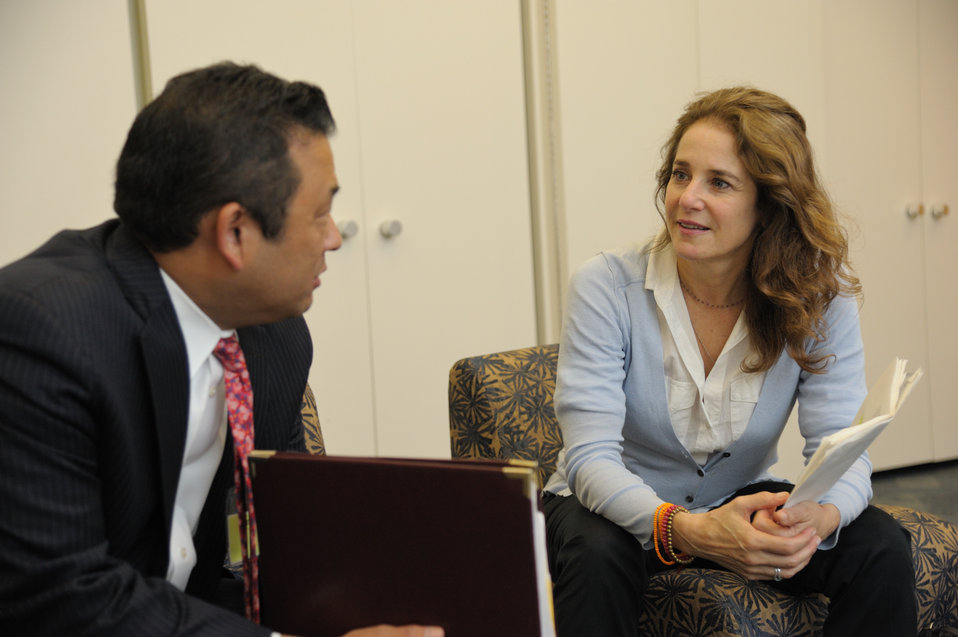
Winger and Mineta2

Debra Winger and David Mineta (Deputy Director of Demand Reduction, White House Office of National Drug Control Policy) speak prior to NIDA’s Addiction Performance Project, held Aug 5, 2011 on the NIH Campus